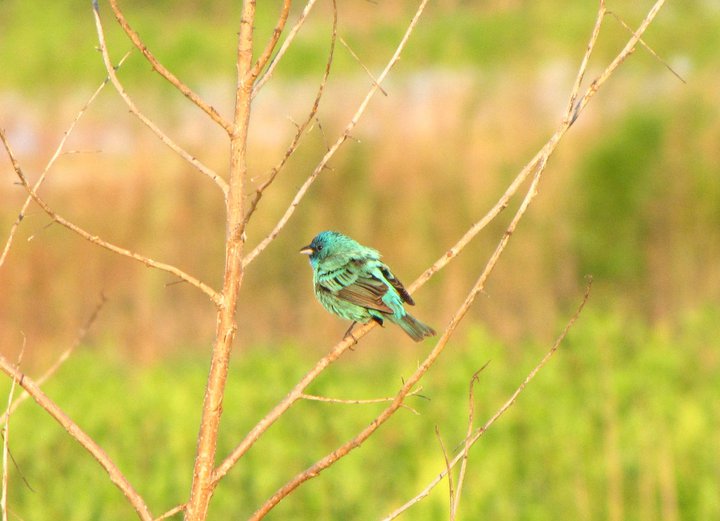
indigo bunting

Port Louisa National Wildlife Refuge